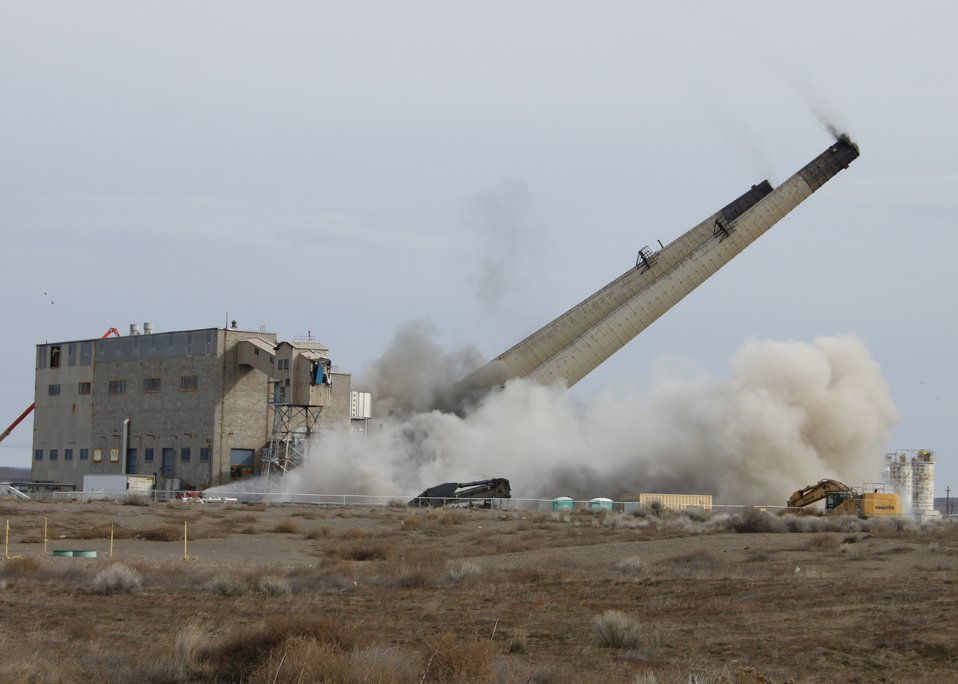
DandD 284E

Recovery Act-funded work at the Hanford site.